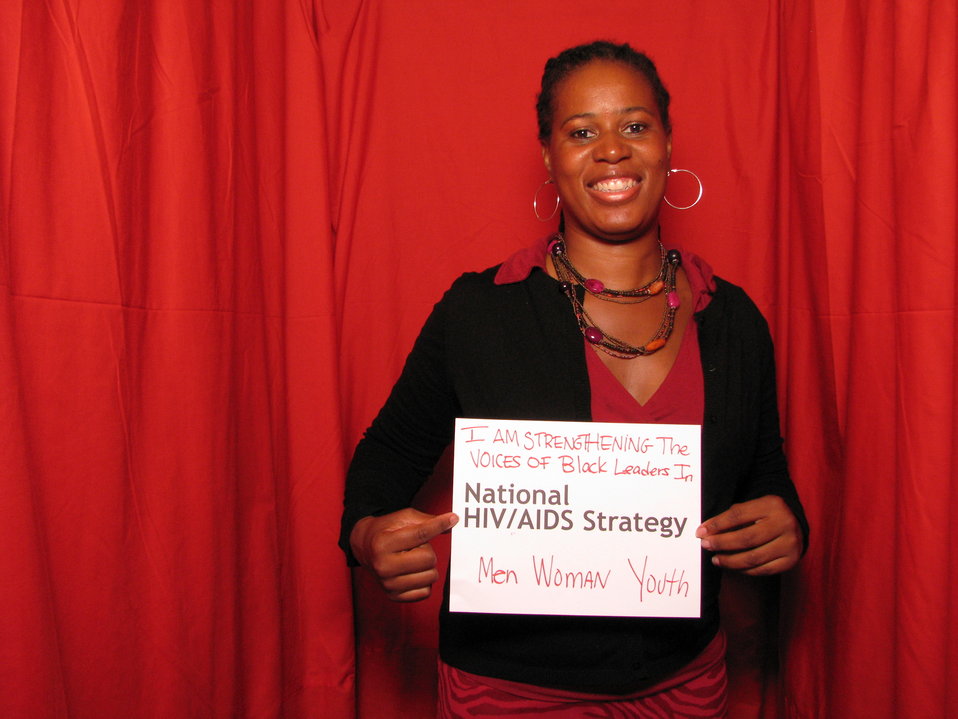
I am Strengthening the Voices of Black Leaders in the National HIV/AIDS Strategy. Men, Women, Youth.

From the AIDS.gov photo booth at the U.S. Conference on AIDS, September 2010 (Orlando, FL).